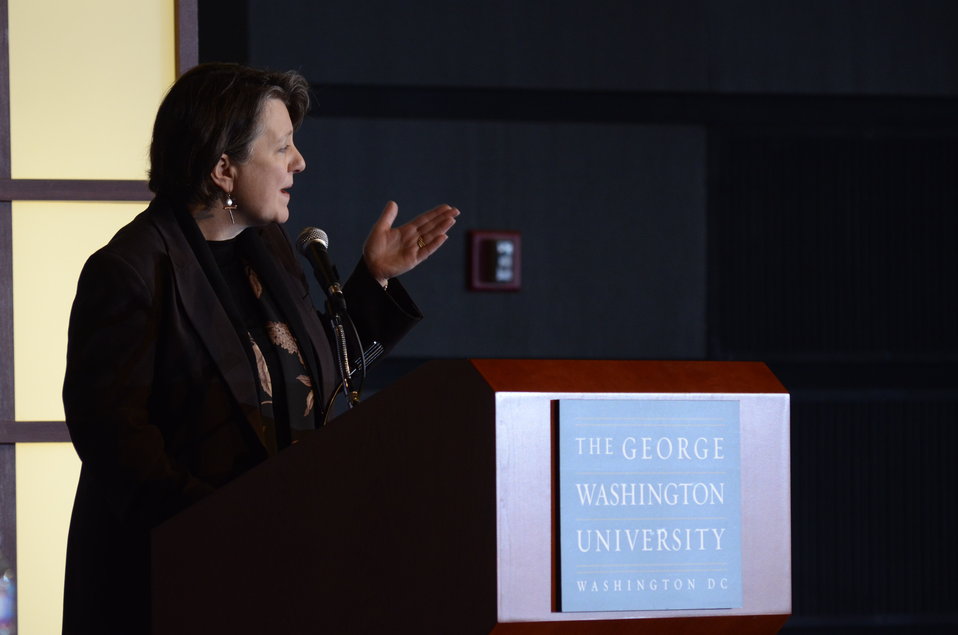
Agriculture Deputy Secretary Dr. Kathleen Merrigan keynote speaker 'Shaping the Farm Bill for a Sustainable Future.' Forum at The Trachtenberg School of Public Policy and Public Administration, George Washington University in Washington, D.C., on Thursday, March 1, 2012.